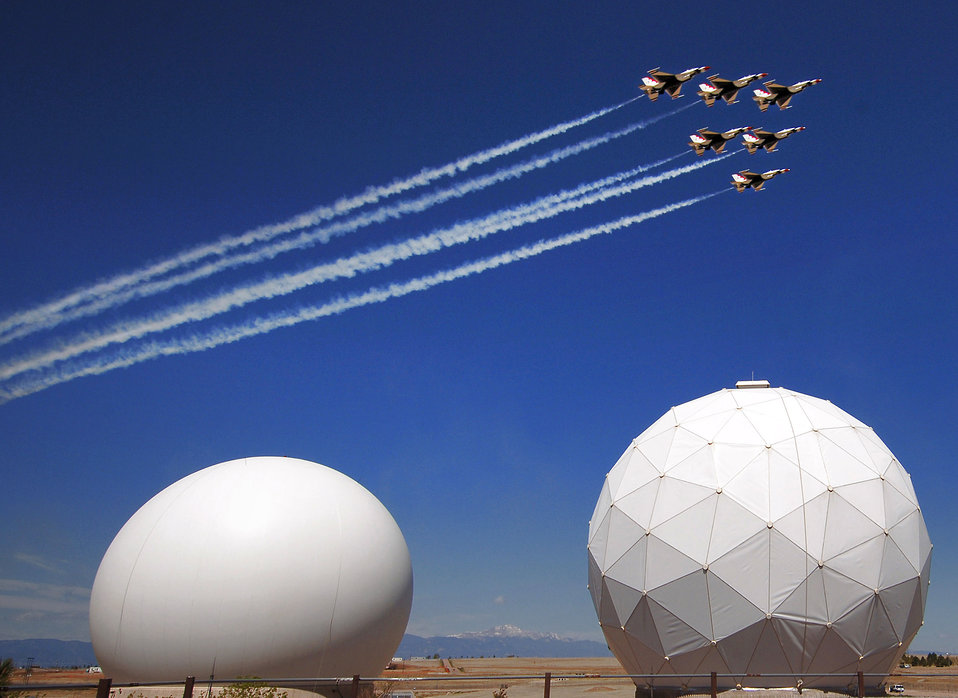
Airpower meets space power

The Air Force Thunderbirds fly over Schriever Air Force Base, Colo., May 25. In the foreground are twin radomes of the Colorado Tracking Station, part of the Air Force Satellite Control Network.